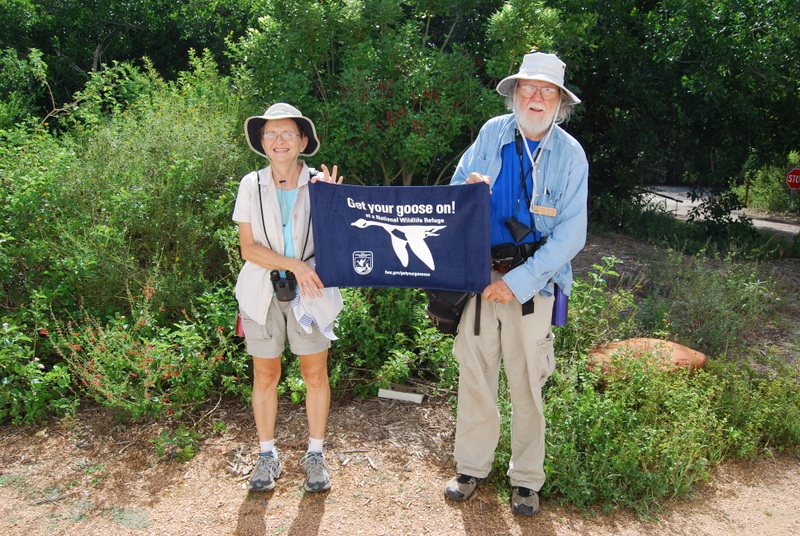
Get Your Goose On!

Mike and Ginny at the butterfly garden at Santa Ana National Wildlife Refuge in southern Texas.